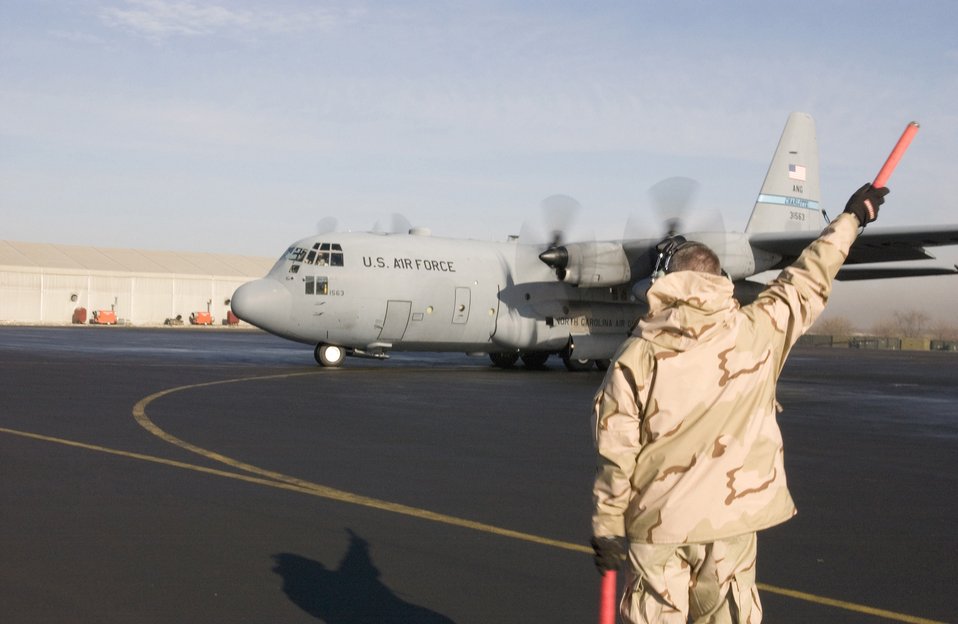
Last Hercules

MANAS AIR BASE, Kyrgyzstan (AFPN) -- The last C-130 Hercules assigned here taxis on the ramp before taking off for its new home at Bagram Air Base, Afghanistan. The aircraft is part of the North Carolina Air National Guard's 774th Airlift Squadron.